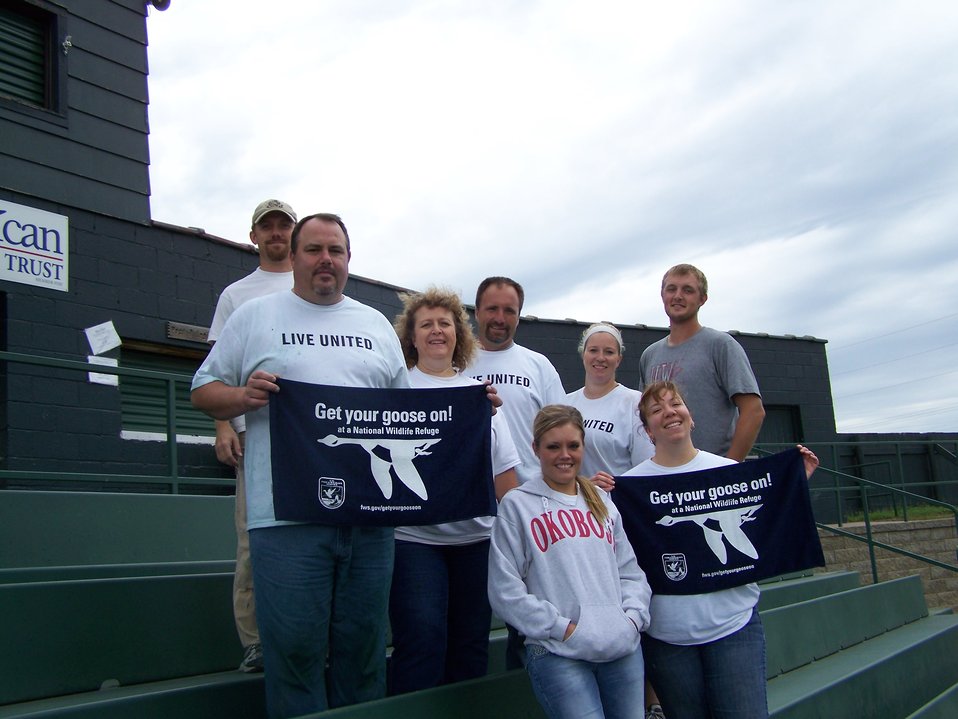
Huron Day of Caring 2012

Huron WMD staff standing on the bleachers we just painted at our local baseball field, of course displaying our Get your Goose On! towels.